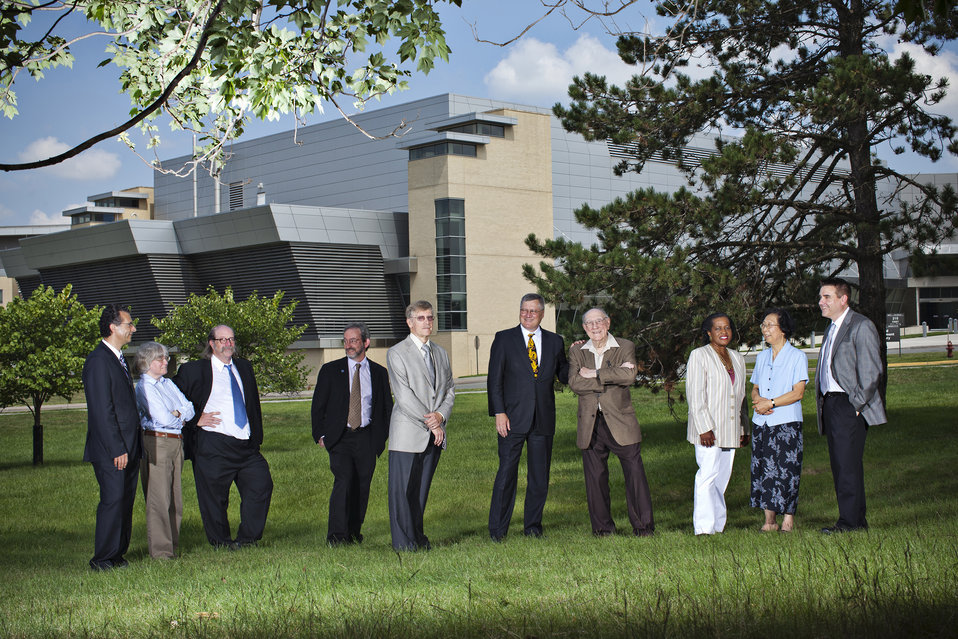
DLMF Award Winners

From left to right are: Abdou Youssef (math search -- George Washington University and NIST) Marjorie McClain (bibliography) Bruce Miller (information architect) Ronald Boisvert (Information Technology Editor) Daniel Lozier (General Editor) Charles Clark (Physical Sciences Editor) Frank Olver (Editor-in-Chief and Mathematics Editor -- University of Maryland and NIST) Bonita Saunders, Qiming Wang, and Brian Antonishek (graphics)